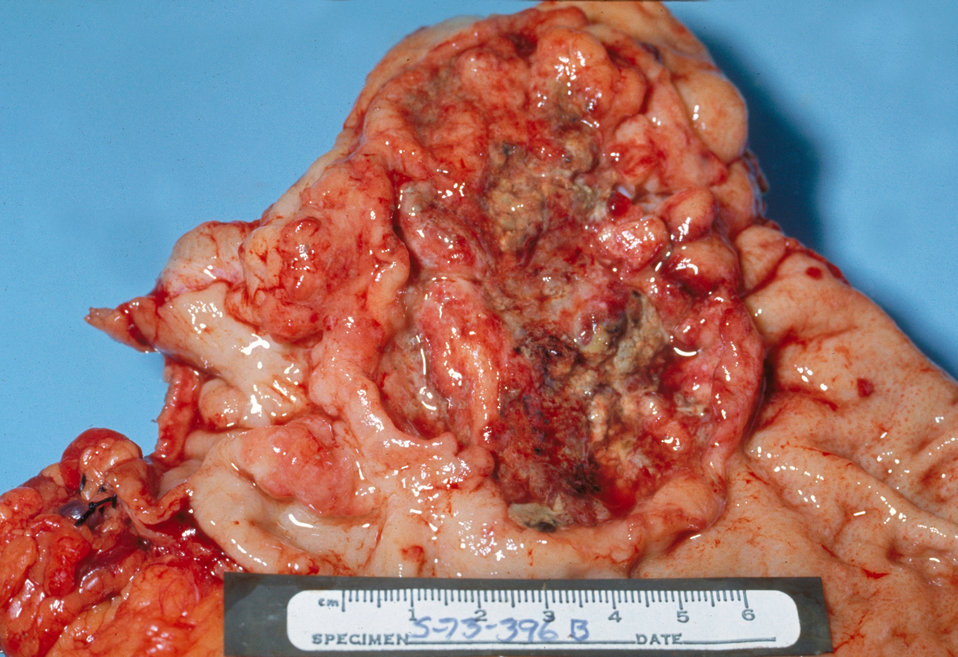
Gross pathology of adenocarcinoma, stomach